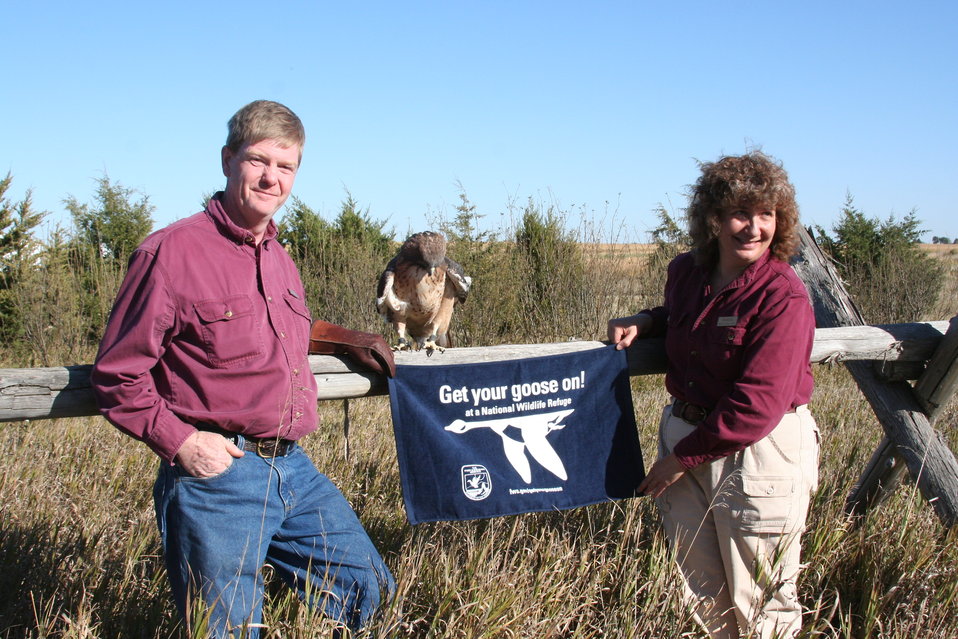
Get Your Goose On! - Raptor Style!

During Huron Wetland Management District's 2012 Prairie Festival, visitors were treated to an up close and personal look at various birds of prey.